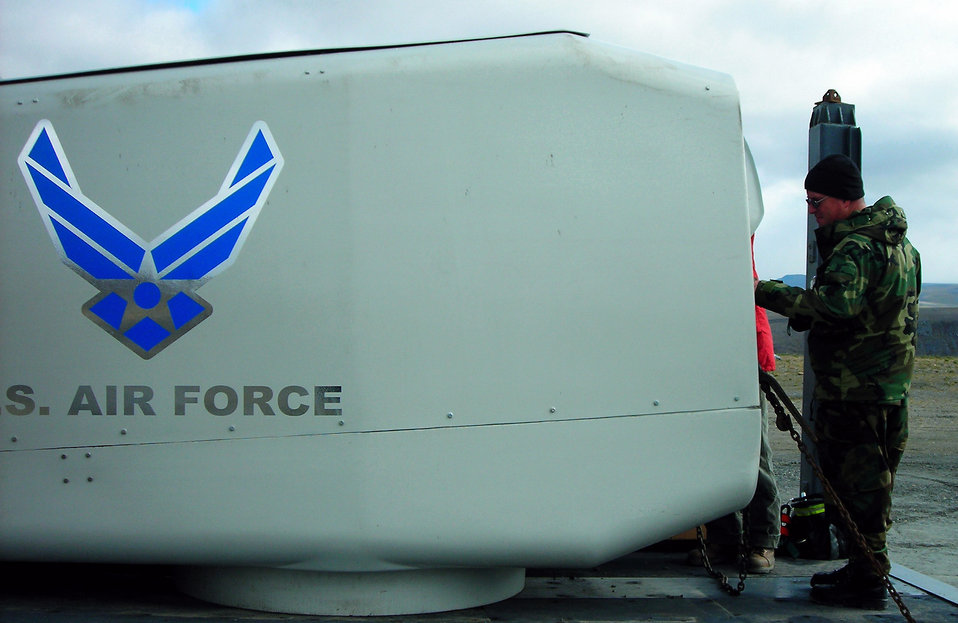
Steady winds blow in fuel savings

Master Sgt. James Fraser, non-commissioned officer in charge of quality assurance for the 611th Civil Engineer Squadron at Elmendorf Air Force Base, Alaska, inspects the turbine nacelle of a wind turbine generator prior to being installed at the top of its 110-foot tower. The wind turbine generator is being installed at the Tin City Long Range Radar Station on the Alaskan coast near the town of Tin City.